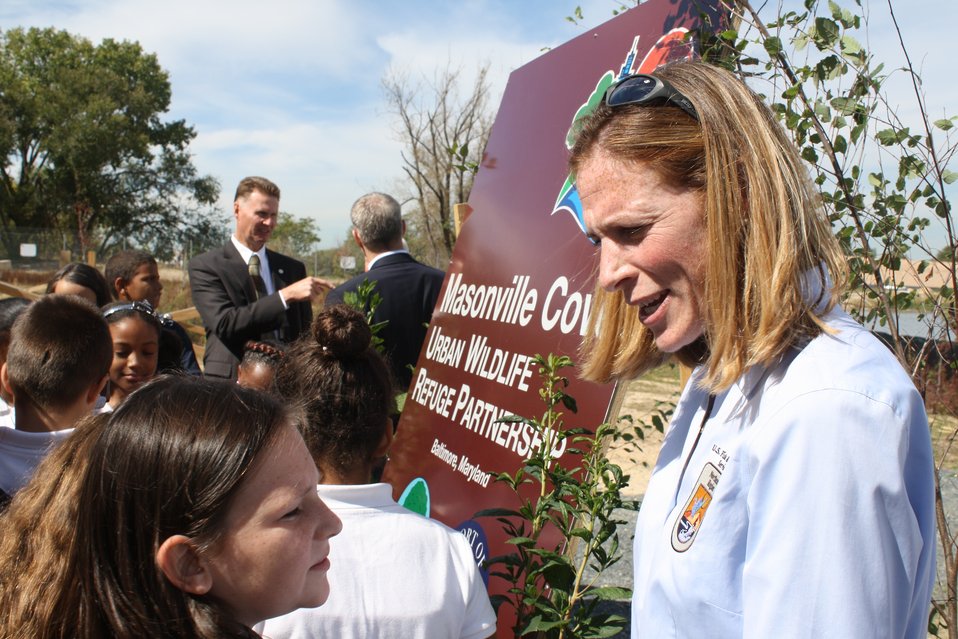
Connecting with youth

Northeast Regional Director Wendi Weber speaks with a student from the Curtis Bay Elementary School at the designation ceremony of Masonville Cove as the nations's first urban wildlife refuge partnership.